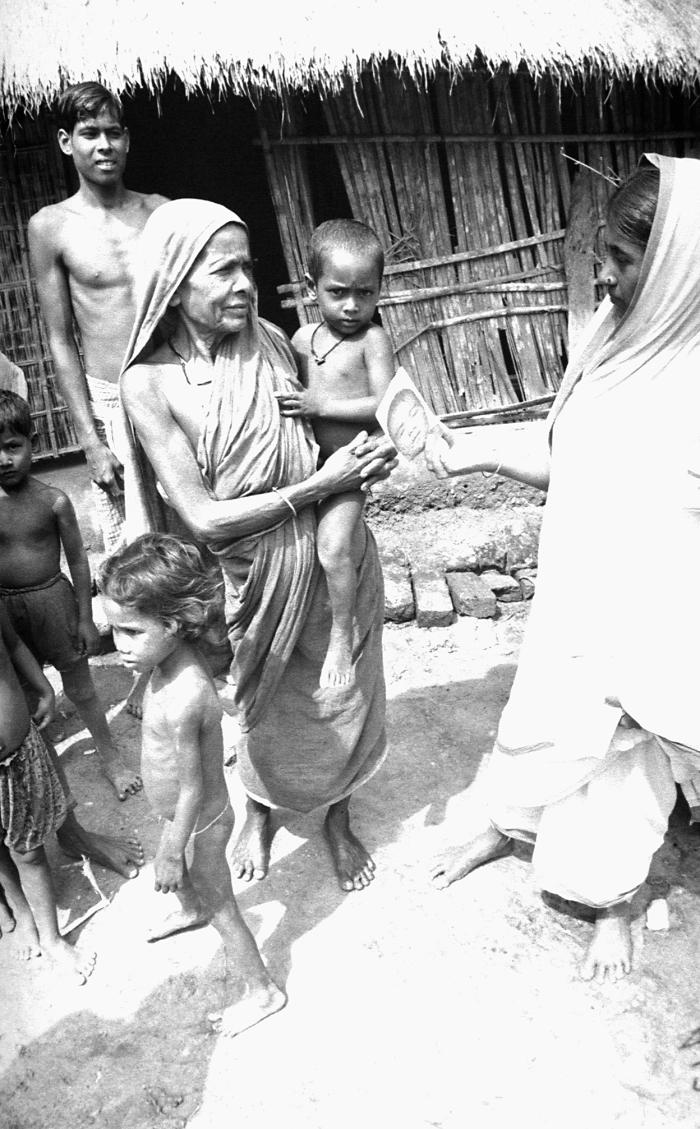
This 1975 photograph depicted a local smallpox eradication team volunteer discussing the contents of the 'smallpox card' to an elderly grandmother, who had been looking after her grandchildren, outside one of the poorer residences. This image was archetypal in nature, for it showed what proved to be a common sight, exemplifying the state of the human condition in Bangladesh.